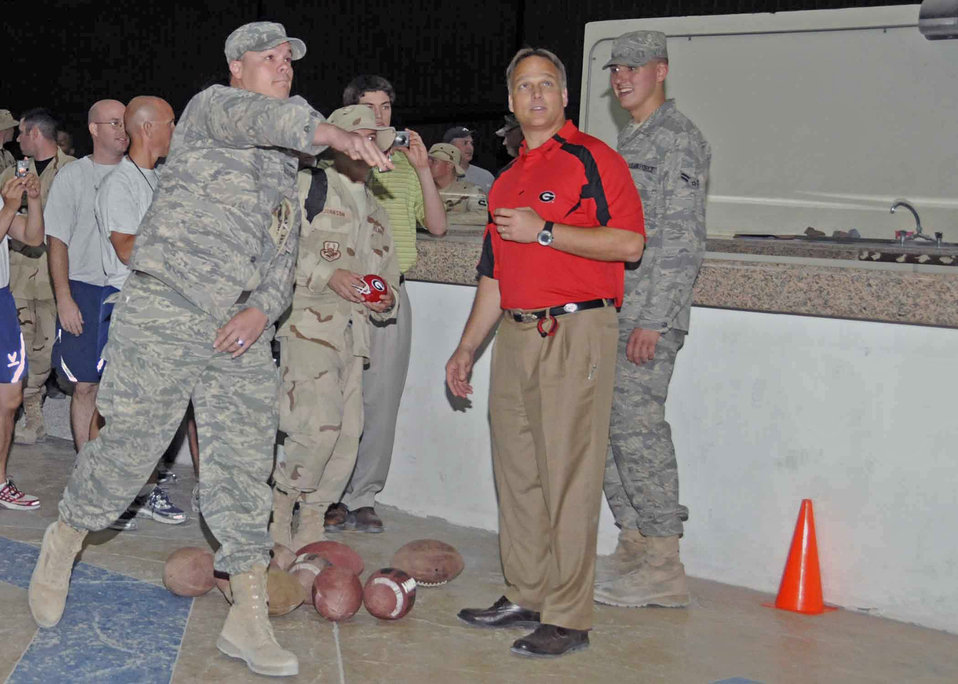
NCAA coaches 'touchdown' in AOR

An Airman tries the